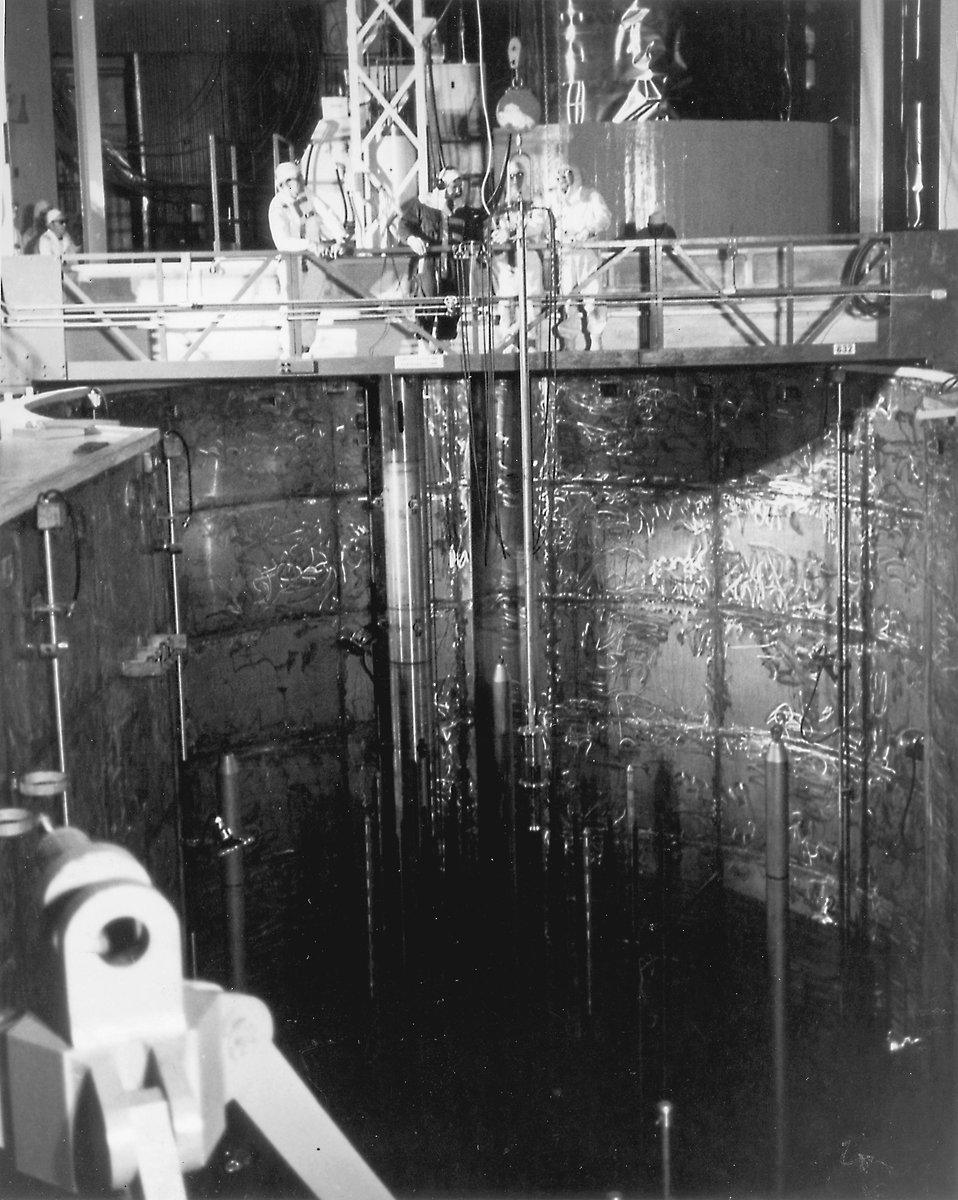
Hartsville, SC... Interior of the H.B. Robinson Steam Electric Plant Unit 2. Circa 1973.